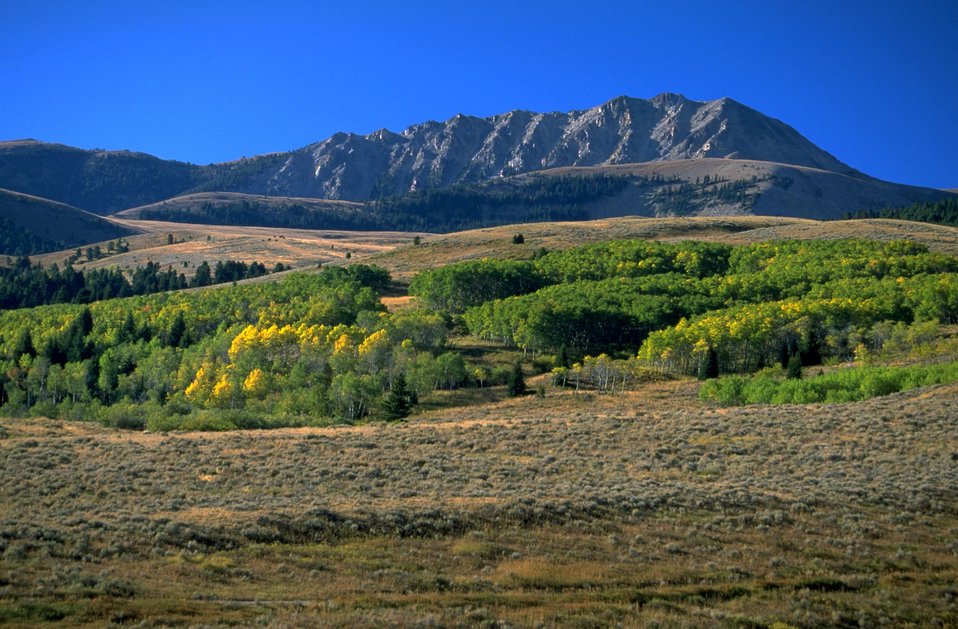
Aspen patch with SawTooth Mountain in background